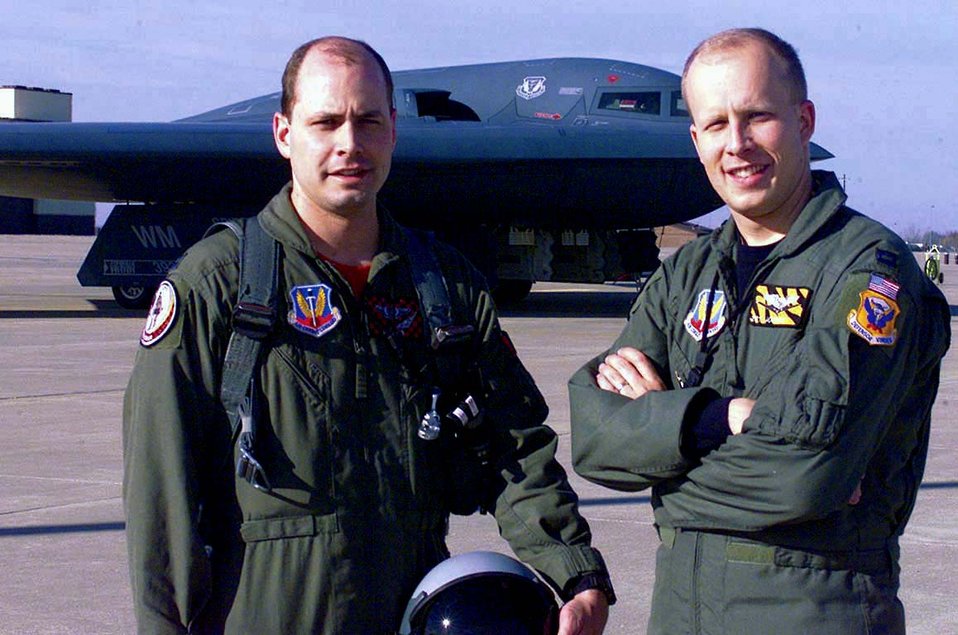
Brothers by blood, siblings by stealth

WHITEMAN AIR FORCE BASE, Mo. -- Capts. Brad (left) and Brian Cochran are the first brothers in the Air Force to become certified as B-2 Spirit pilots. Brad is assigned to the 325th Bomb Squadron here, and Brian is assigned to the 393rd BS here.